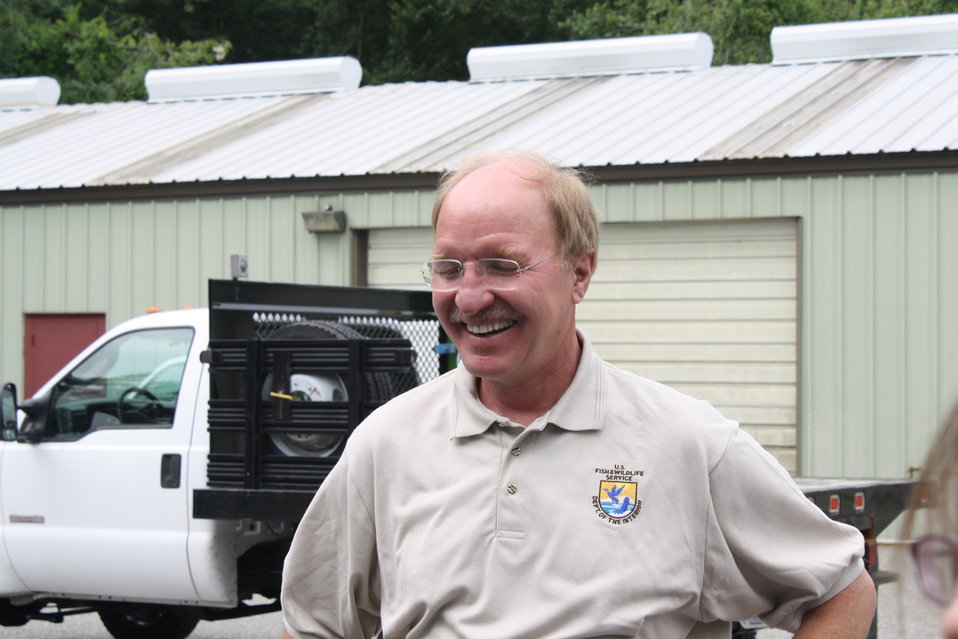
Nashua National Fish Hatchery welcomes regional office employees

Project Leader Joe McKeon.